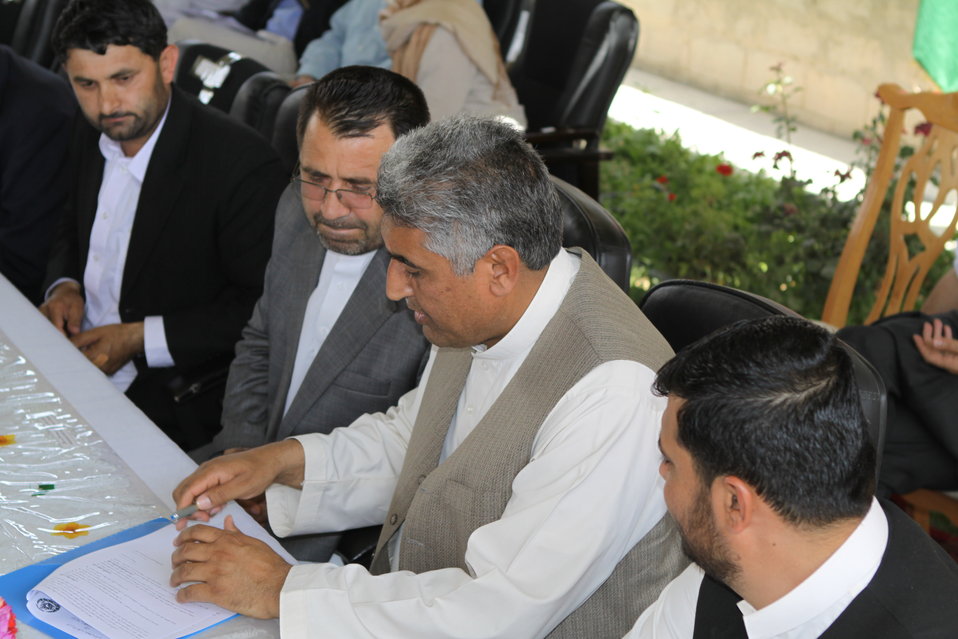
Bolan Poultry Farm